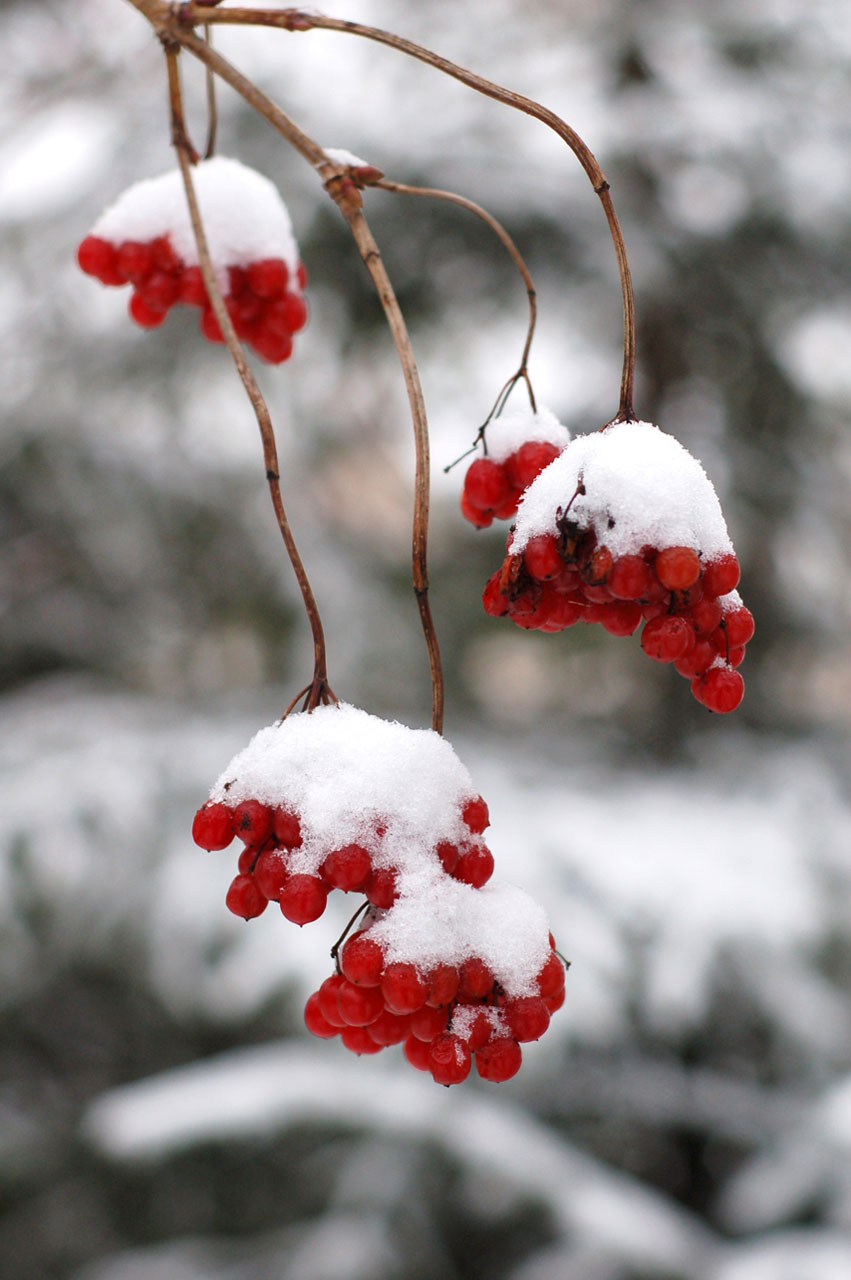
Red berries in winter on a greyish background.